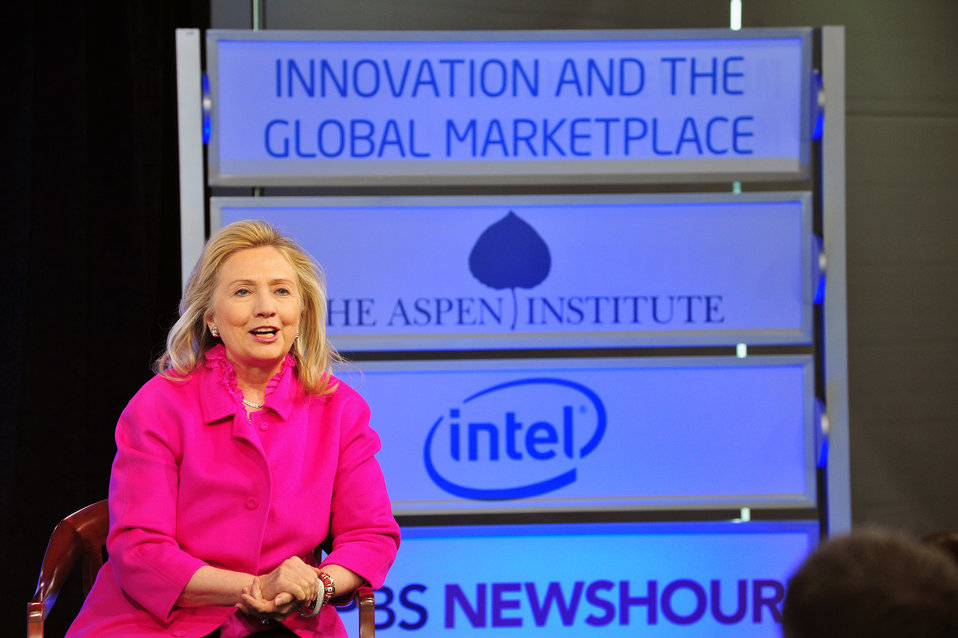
Secretary Clinton Joins Jim Lehrer in a Discussion

U.S. Secretary of State Hillary Rodham Clinton joins Jim Lehrer in a discussion at the Innovation and the Global Marketplace: A Discussion on American Innovation, Trade and the Next 10 Million Jobs event at the Newseum, in Washington, D.C., on December 14, 2011.